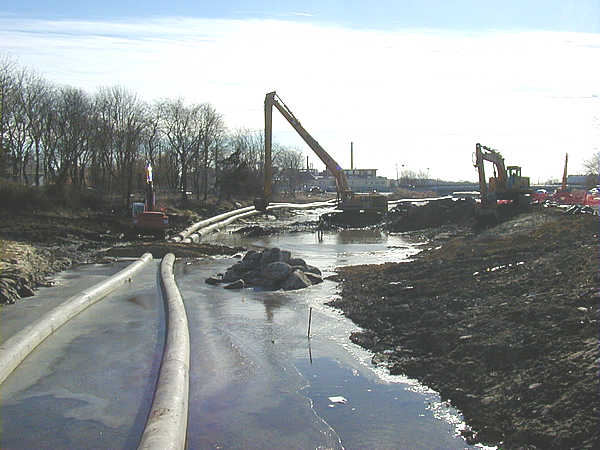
Winter 2003, Redirecting the Acushnet River to allow excavation of the river bed

In-river excavation looking south with the Town of Acushnet to the left and New Bedford to the right.